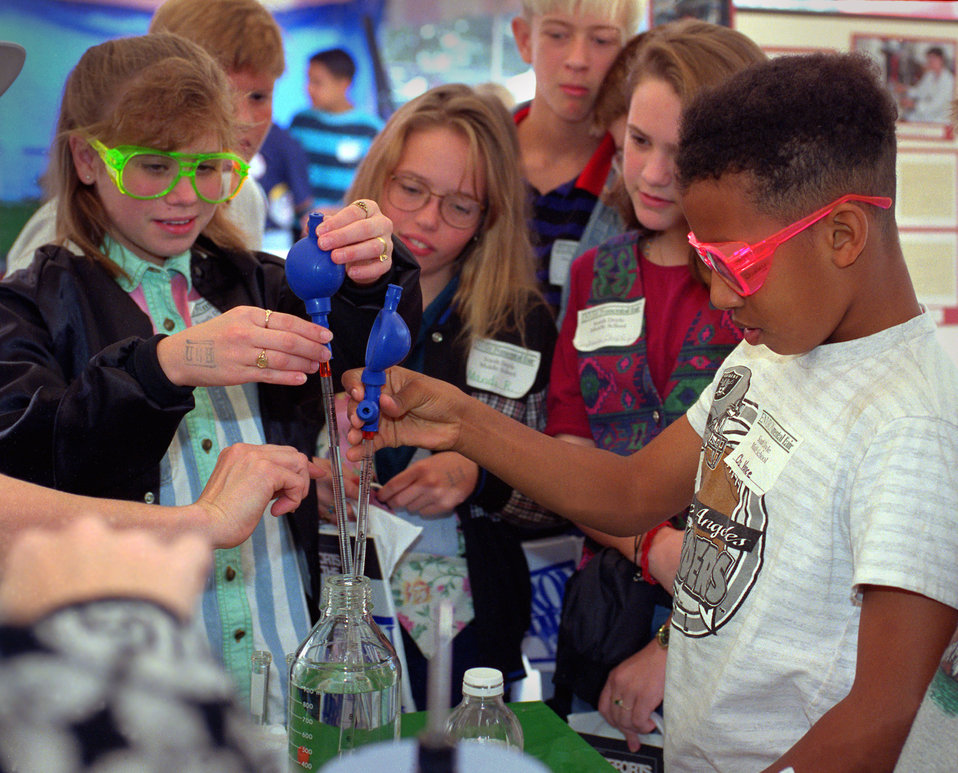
Environmental Fair at American Museum of Science and Energy Oak Ridge

93-530-9 DOE photo by Lynn Freeny

Environmental Fair at American Museum of Science and Energy Oak Ridge Tennessee 10-11-1993